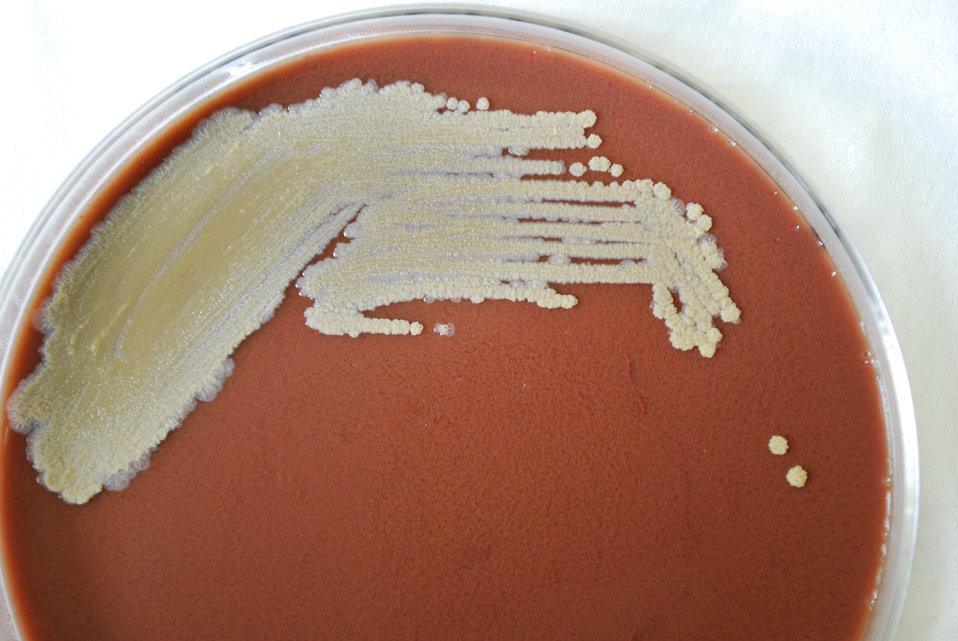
An enlarged view of PHIL 12235, this photograph depicts the colonial morphology displayed by Gram-negative Burkholderia pseudomallei bacteria, which was grown on a medium of chocolate agar, for a 48 hour time period, at a temperature of 37�C.